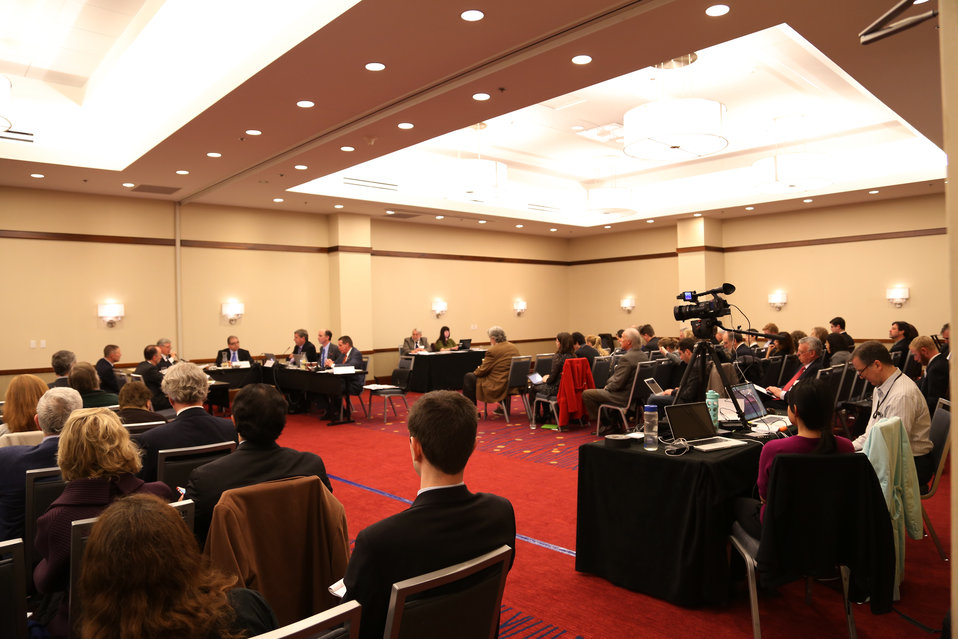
Wildlife Trafficking Advisory Council Meeting March 20, 2014